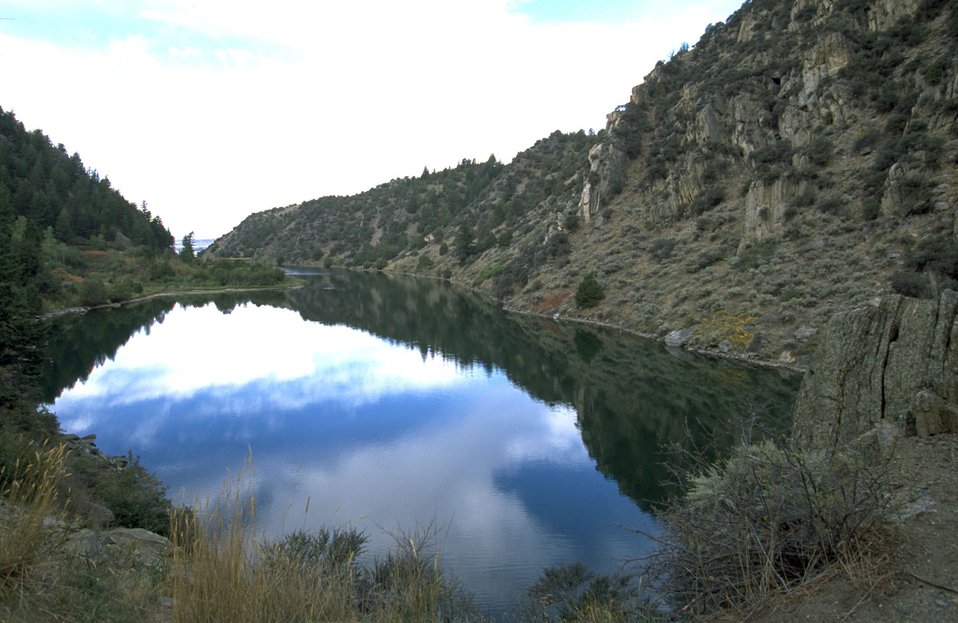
Backwaters from Madison Dam between dam and Ennis Lake